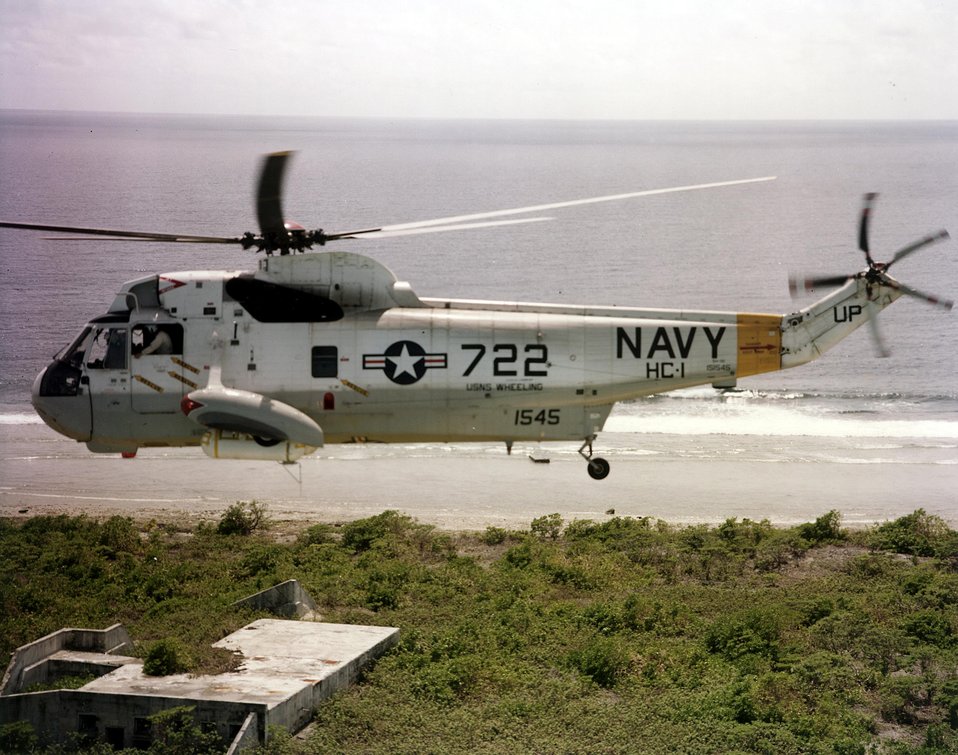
Aerial radiation survey on Bikini Atoll.
11-15-78